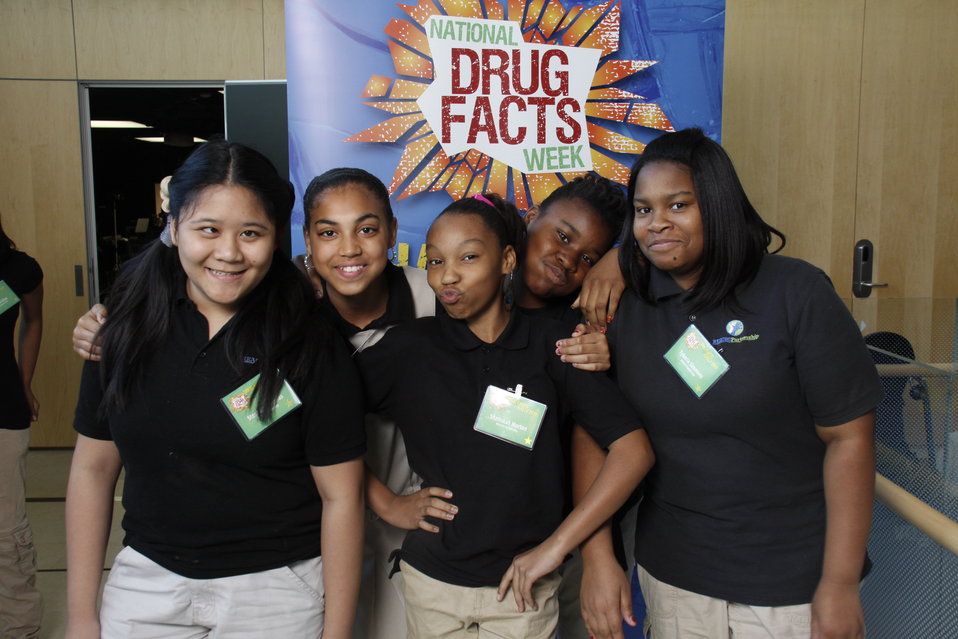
NDFW Mentor Event